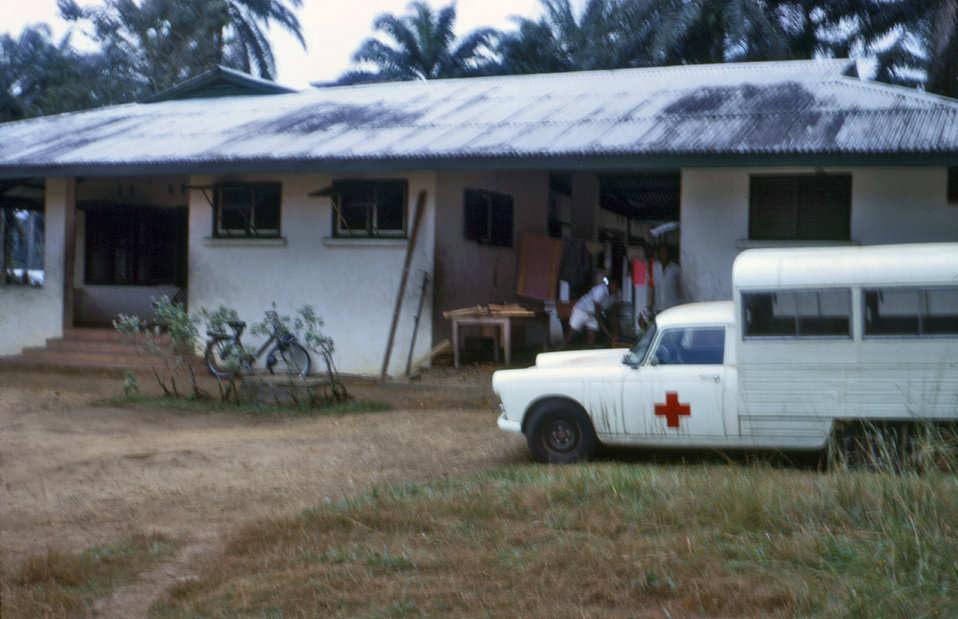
This photograph shows an International Committee of the Red Cross (ICRC) kitcar that was used to move people and supplies during the Nigerian-Biafran war.